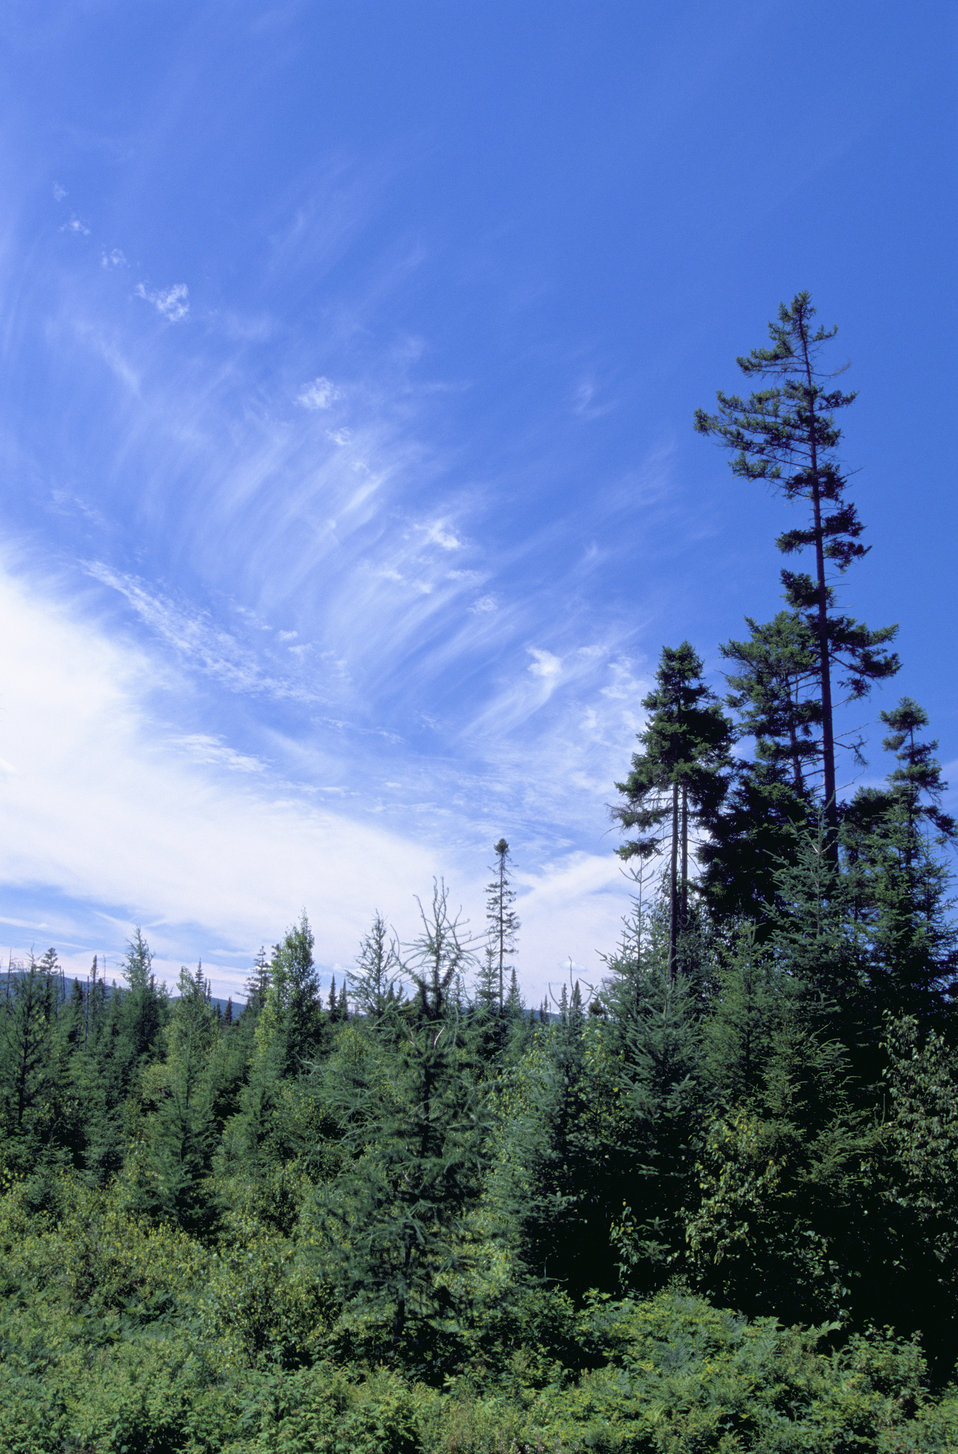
Silvio O. Conte National Wildlife Refuge